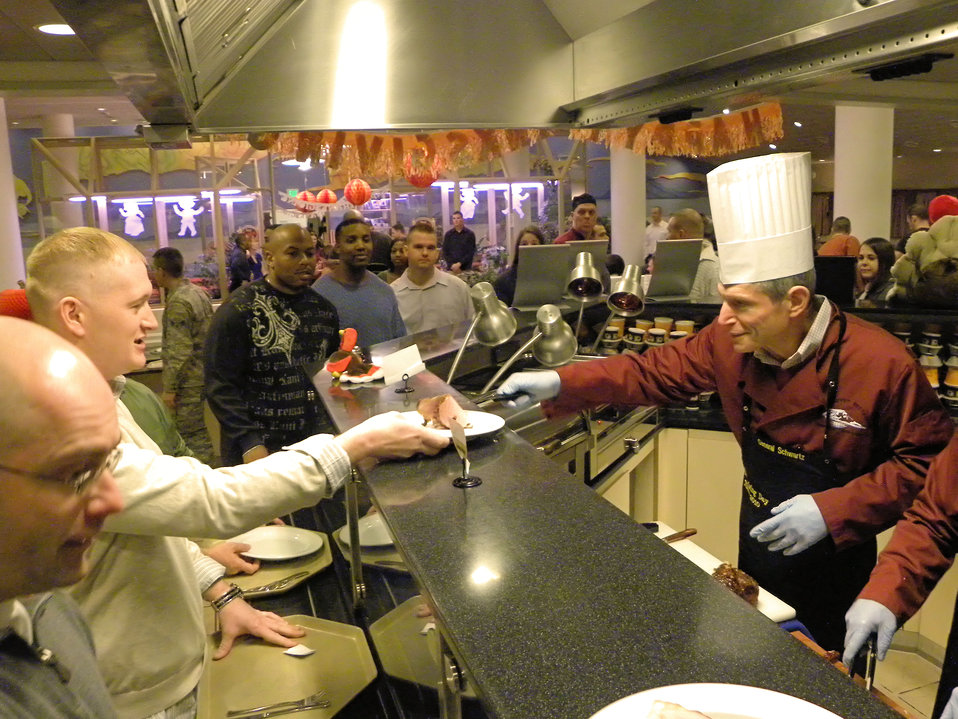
CSAF visit to Thule AB

Air Force Chief of Staff Gen. Norton Schwartz serves Thanksgiving meals Nov. 25, 2010, to the men and women stationed at Thule Air Base, Greenland. Thule AB is the Department of Defense's northernmost installation.